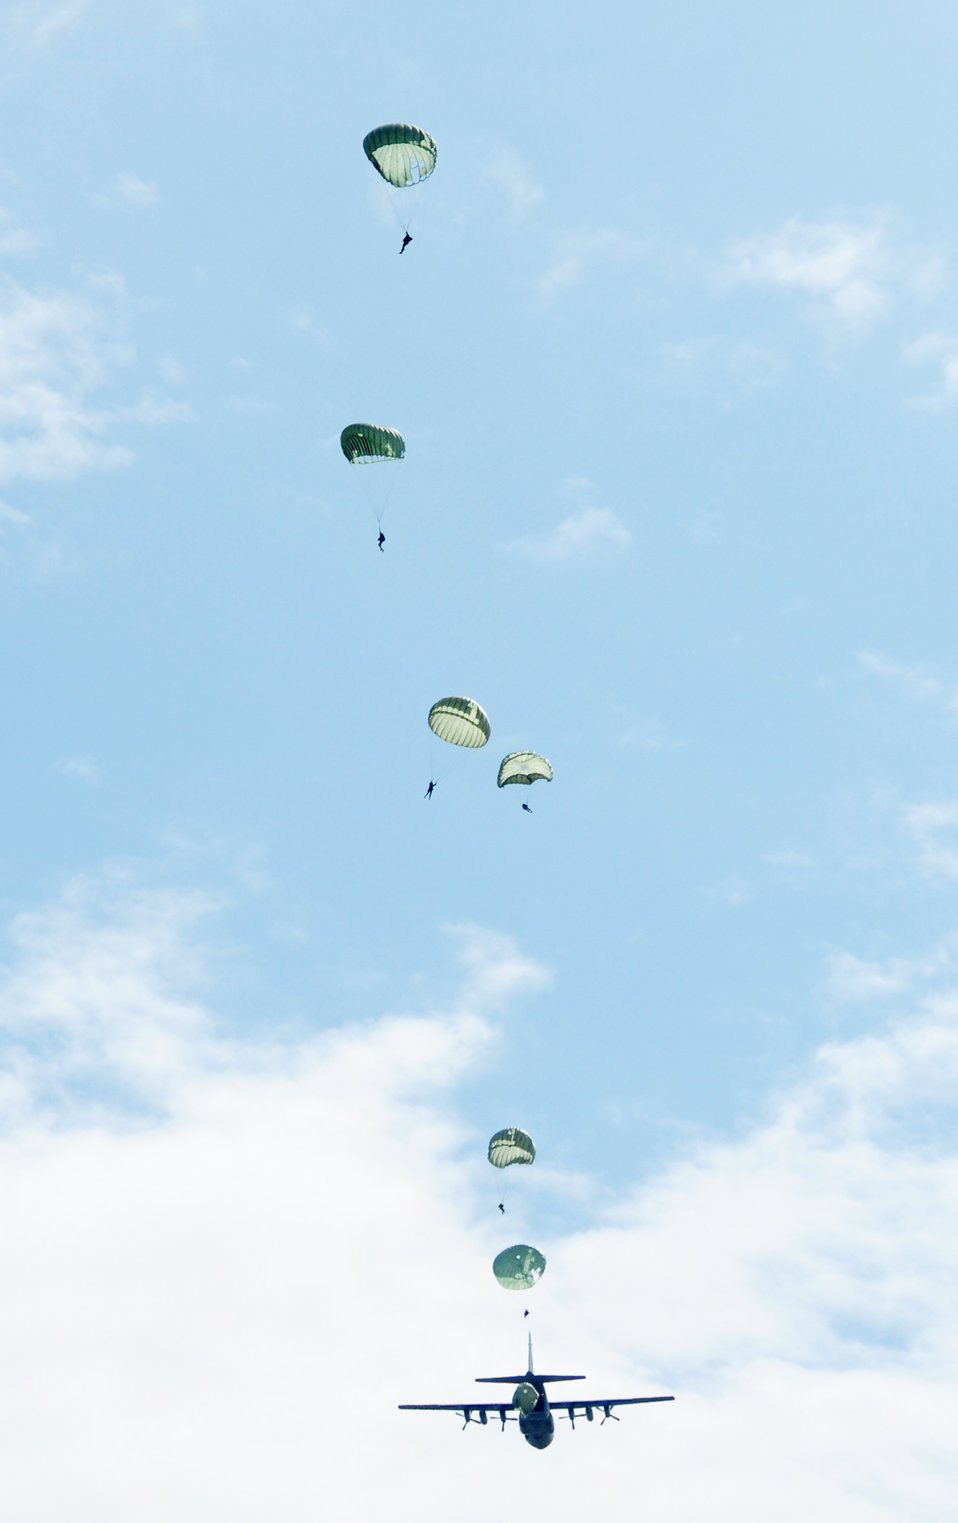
5 NATO countries take part in jump week

U.S. forces along with four NATO countries parachute over the Bunker drop zone Aug. 13 in southwestern Germany. U.S. Soldiers and Airmen performed a combined airborne jump with four other NATO countries during International Jump Week.